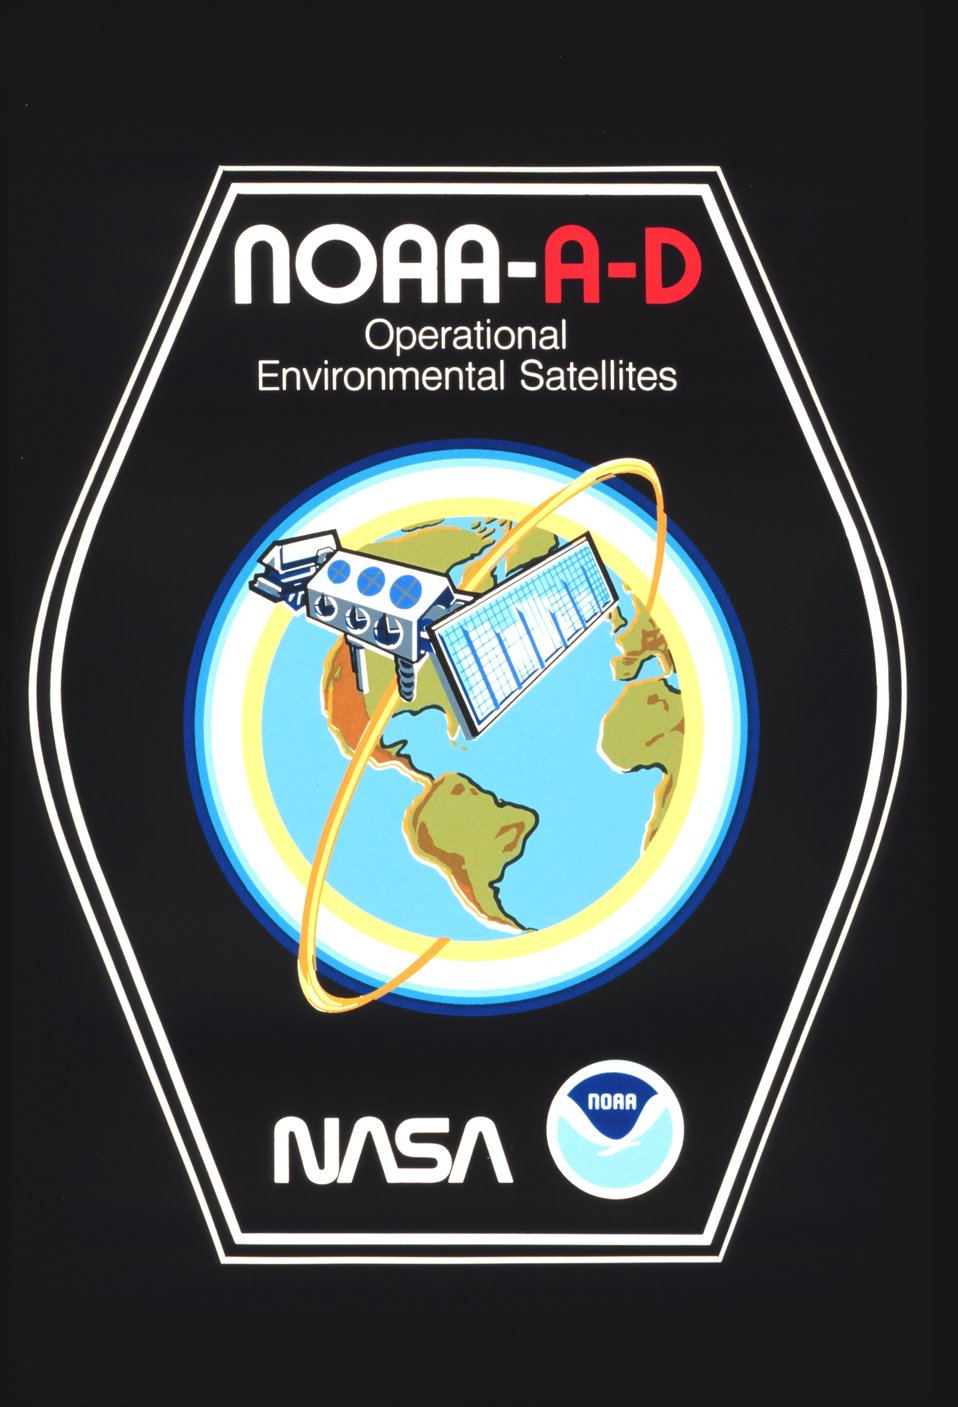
Graphic of briefcase sticker art lauding NOAA A-D, the first of the TIROS-N polar-orbiting satellites. Only NOAA-A and NOAA-C ultimately became operational .